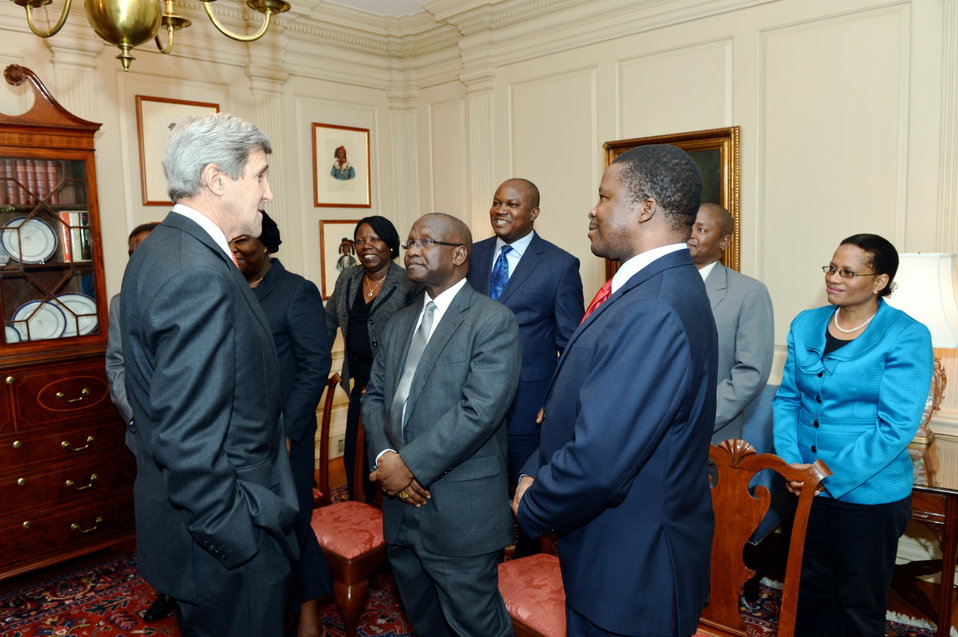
Secretary Kerry Meets With Chief Justices from Nigeria, Liberia, and Supreme Court Officials from Nigeria, Liberia, and Botswana

U.S. Secretary of State John Kerry Kerry meets with Chief Justices from Nigeria, Liberia, and Supreme Court Officials from Nigeria, Liberia, and Botswana at the U.S. Department of State in Washington, D.C., on April 9, 2014.